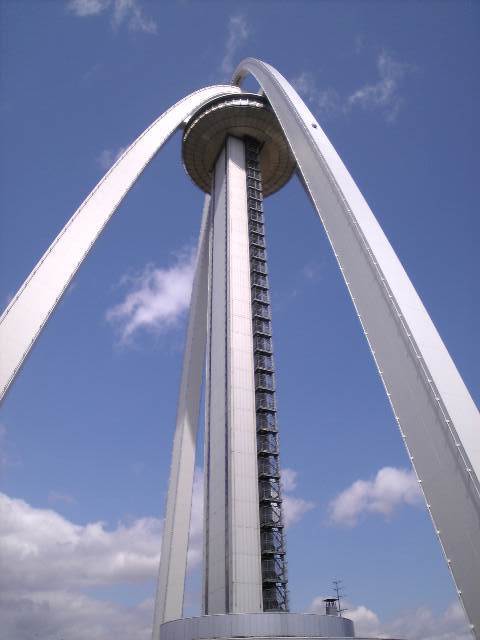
Ichinomiya Twin Arch 138. Taken by Stephanie Bailey, April 2007, Ichinomiya, Achi, Japan